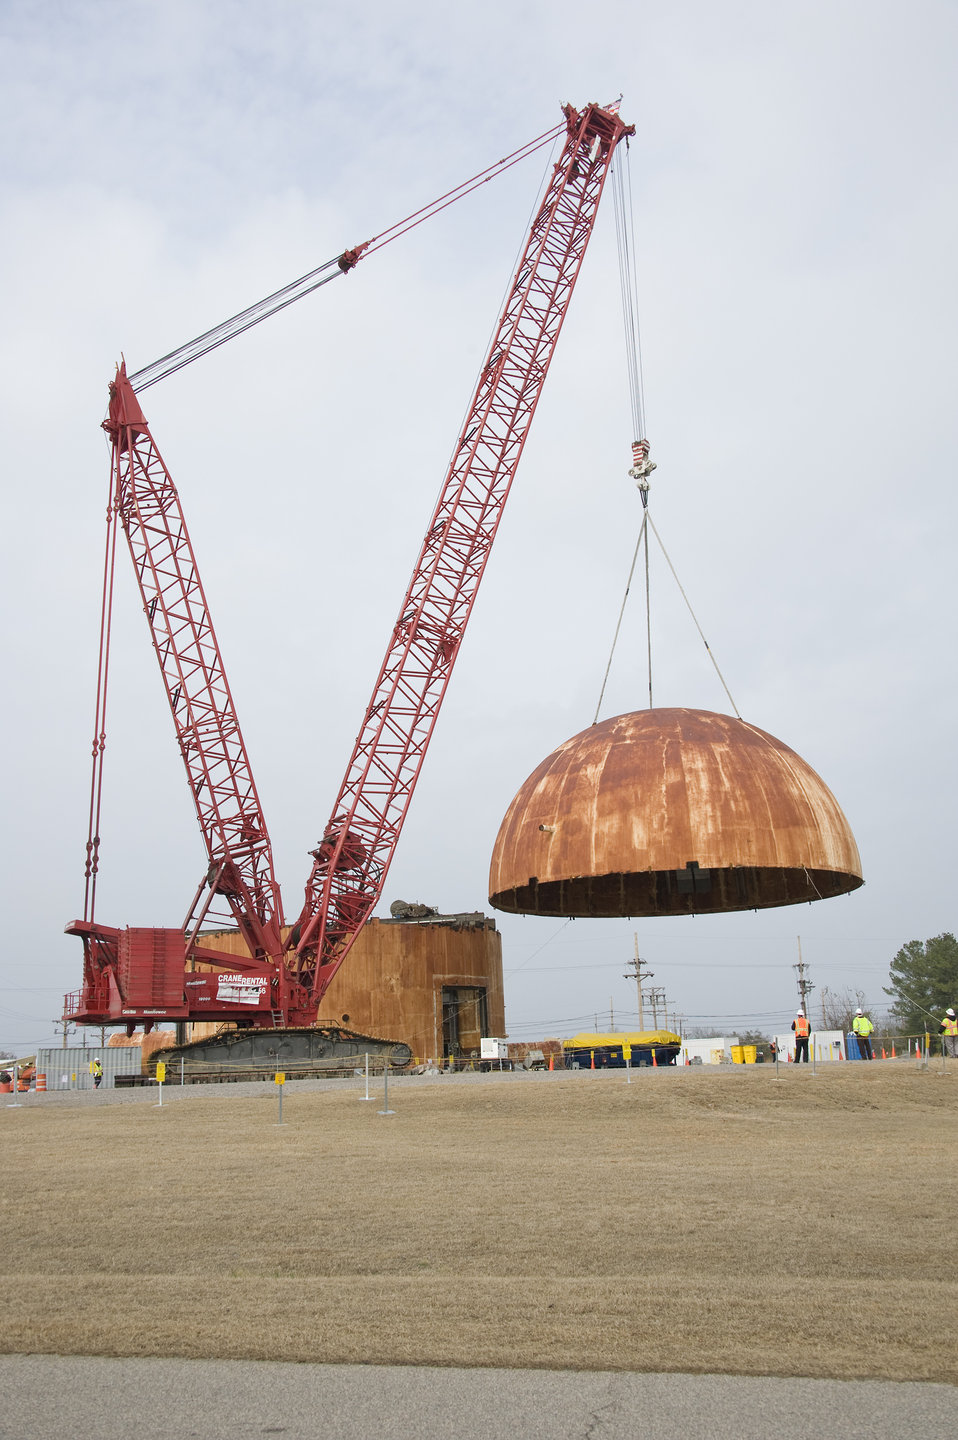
HWCTR Decommissioning

Work is under way to decommission the Heavy Water Components Test Reactor. A 660-ton crane with a 200-foot boom was used to lift the 174,000-pound dome from HWCTR's base.